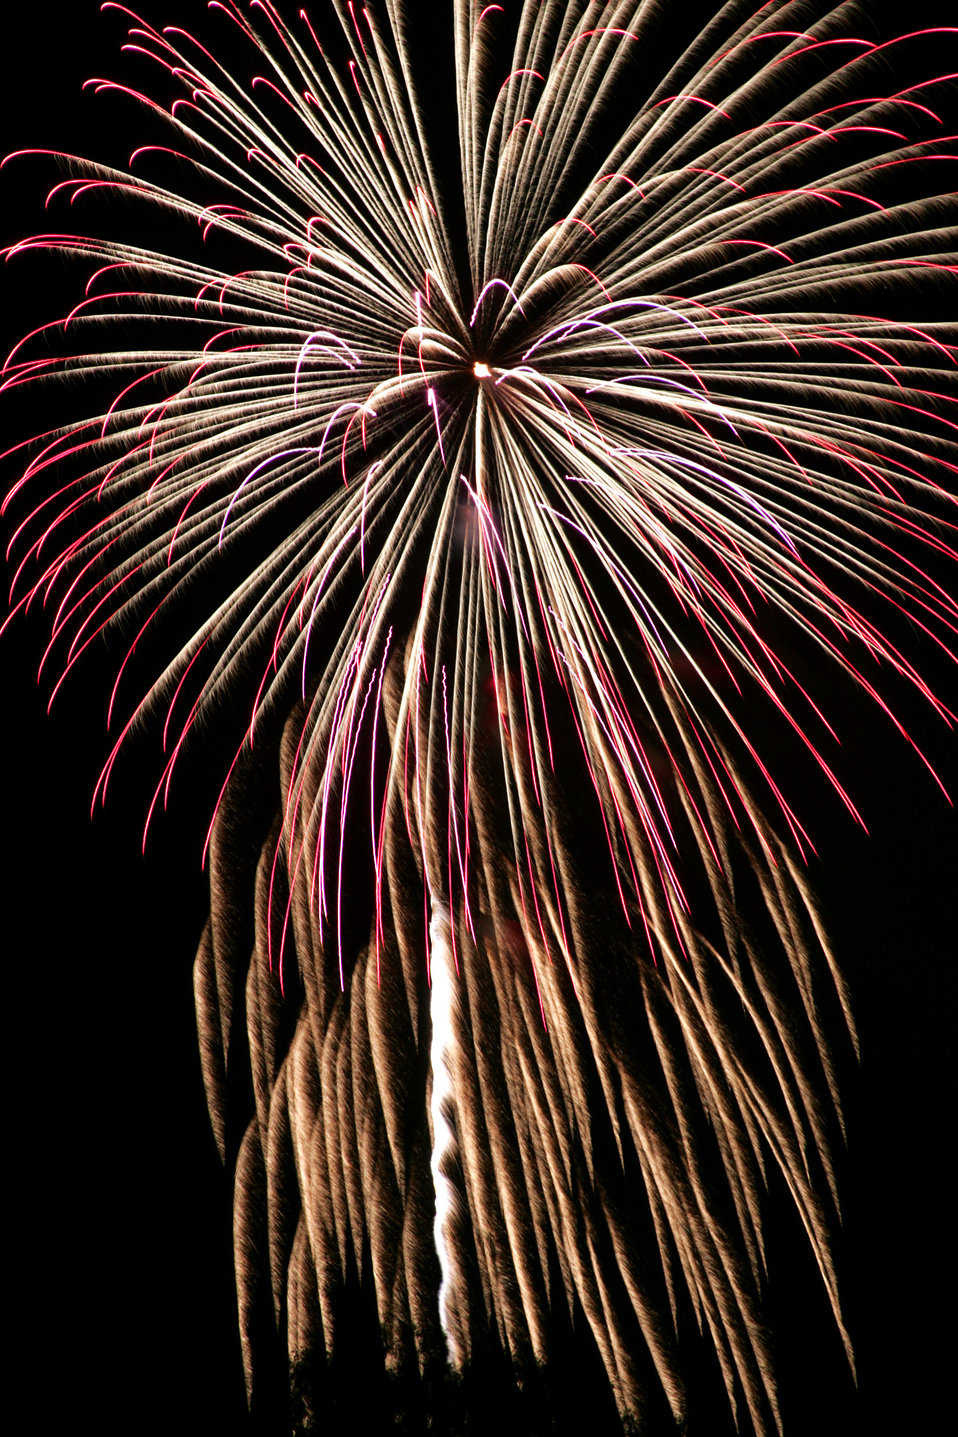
Celebrating the 4th of July

Happy Independence Day, America! Fireworks are shown from the 2005 celebration at Lackland Air Force Base, Texas.